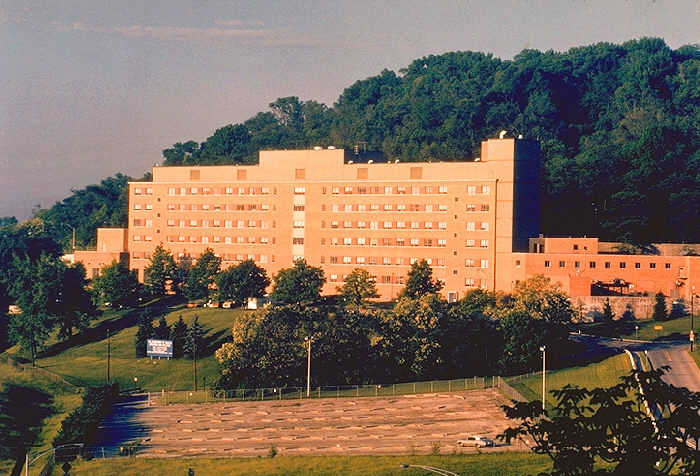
This is the National Institute for Occupational Safety and Health (NIOSH) Taft Building, located in Cincinnati, Ohio.